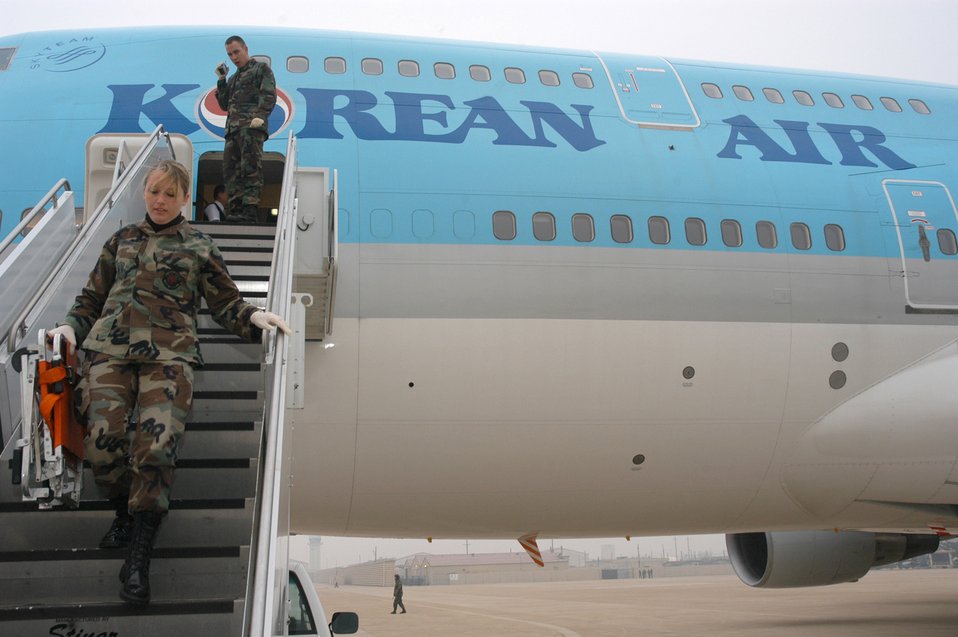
Two Korean Airline jets divert to Kunsan

Senior Airman Tonya Jones prepares to receive a 65-year old Korean man needing medical attention at Kunsan Air Base, South Korea. The man was transported to an ambulance after his Korean Airline flight was diverted to Kunsan from Incheon International Airport. The passenger airliner, with 274 people on board, diverted to Kunsan due to poor weather conditions at Incheon. The man was transported to Kunsan Medical Center in downtown Kunsan City. Airman Jones is a medical technician assigned to the 8th Medical Group.